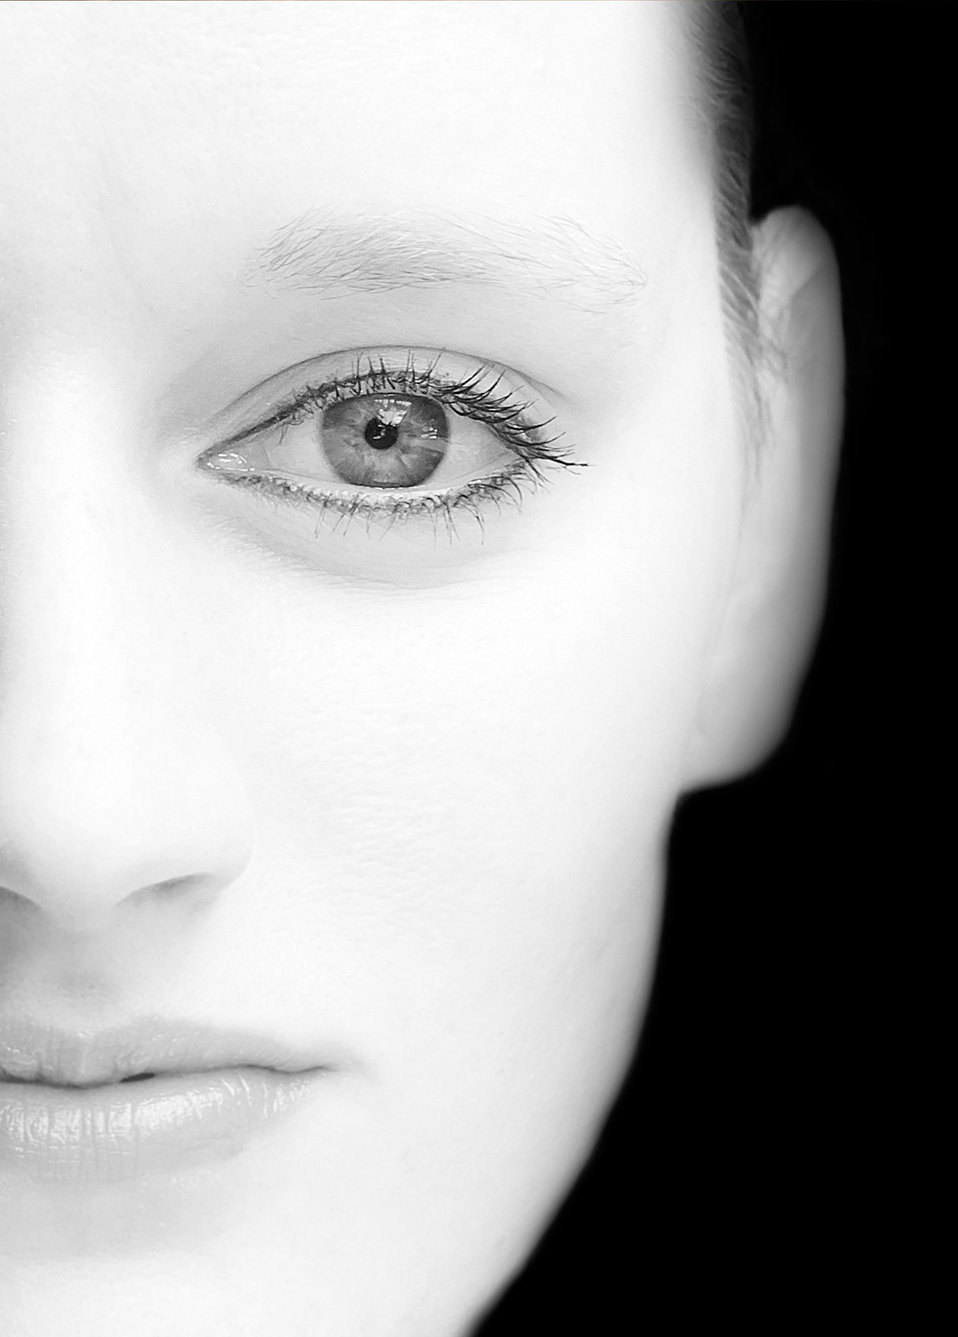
Woman - black and white.